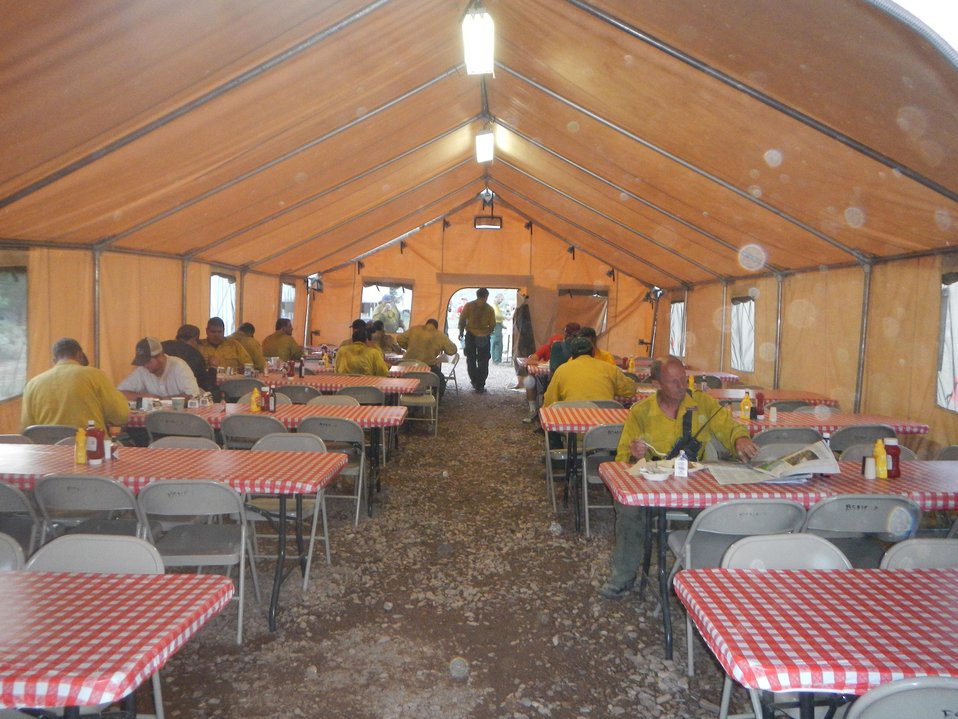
The Moose Meadow Fire in the Beaverhead-Deerlodge National Forest near Philipsbug, MT began on Jul. 25, 2013 by lightning has consumed approximately 3,500 acres and is now approximately 70% contained.